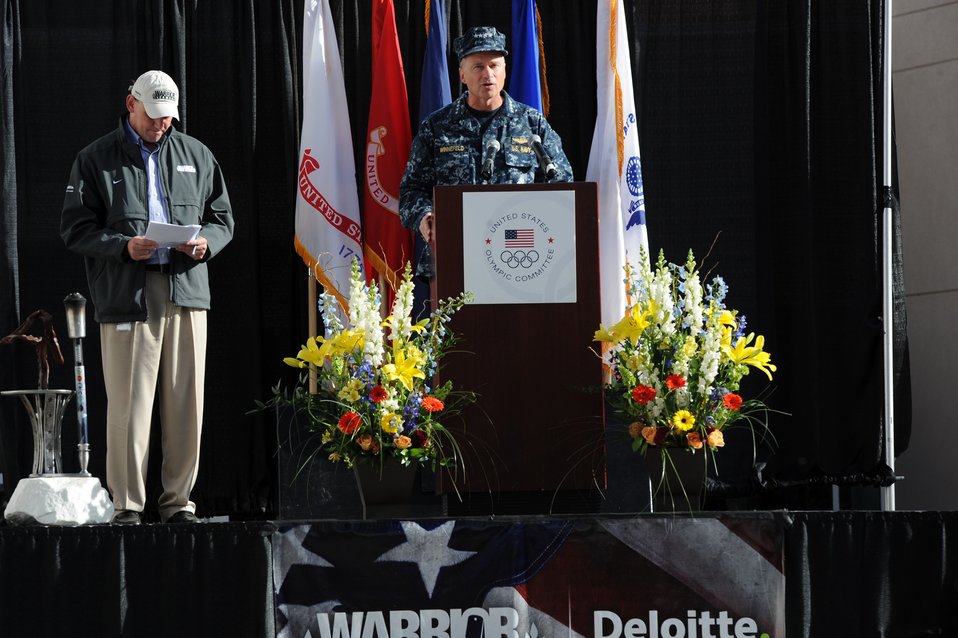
Opening Ceremony

Navy Adm. James Winnefeld speaks during the 2011 Warrior Games opening ceremony May 16, 2011, at the U.S. Olympic Training Center in Colorado Springs, Colo., May 16, 2011. Some 200 wounded warriors and disabled veterans from all the military services are competing in paralympic-style athletic events May 16 through May 21. Admiral Winnefeld is the North American Aerospace Defense Command and U.S. Northern Command commander.